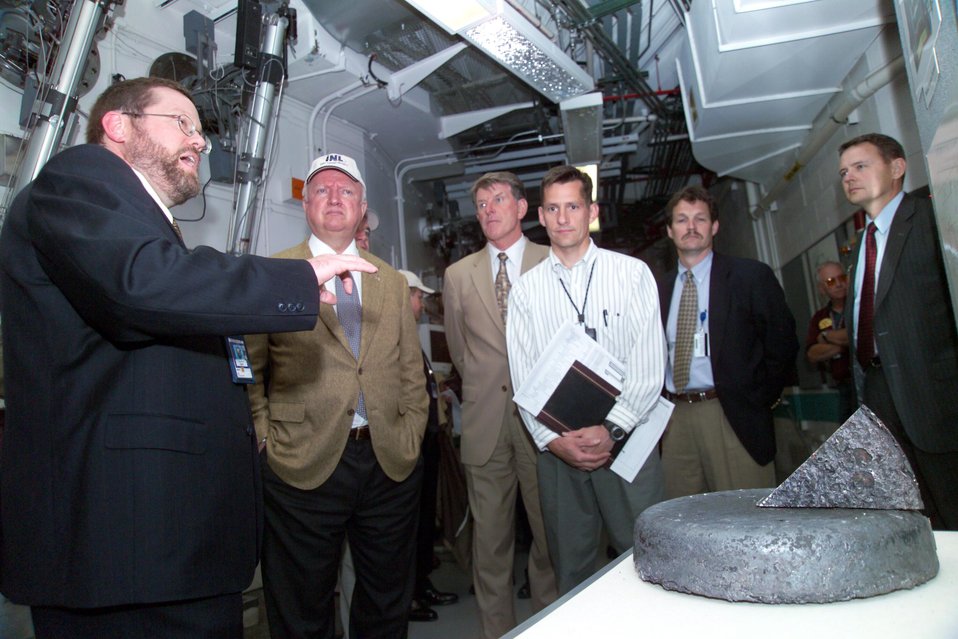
DURING A VISIT TO THE IDAHO NATIONAL LABORATORY IN JUNE 2005, SECRETARY BODMAN VISITS THE MATERIALS AND FUEL COMPLEX.

INL'S MATERIALS AND FUELS COMPLEX IS LOCATED 38 MILES WEST OF IDAHO FALLS ON THE HIGH DESERT SAGEBRUSH STEPPE OF THE SNAKE RIVER PLAIN IN SOUTHEASTERN IDAHO. THE COMPLEX IS THE PRIME TESTING CENTER FOR ADVANCED TECHNOLOGIES ASSOCIATED WITH NUCLEAR POWER SYSTEMS. IT CONTRIBUTES INCREASINGLY EFFICIENT REACTOR FUELS AND THE IMPORTANT WORK OF NONPROLIFERATION HARNESSING MORE ENERGY WITH LESS RISK.